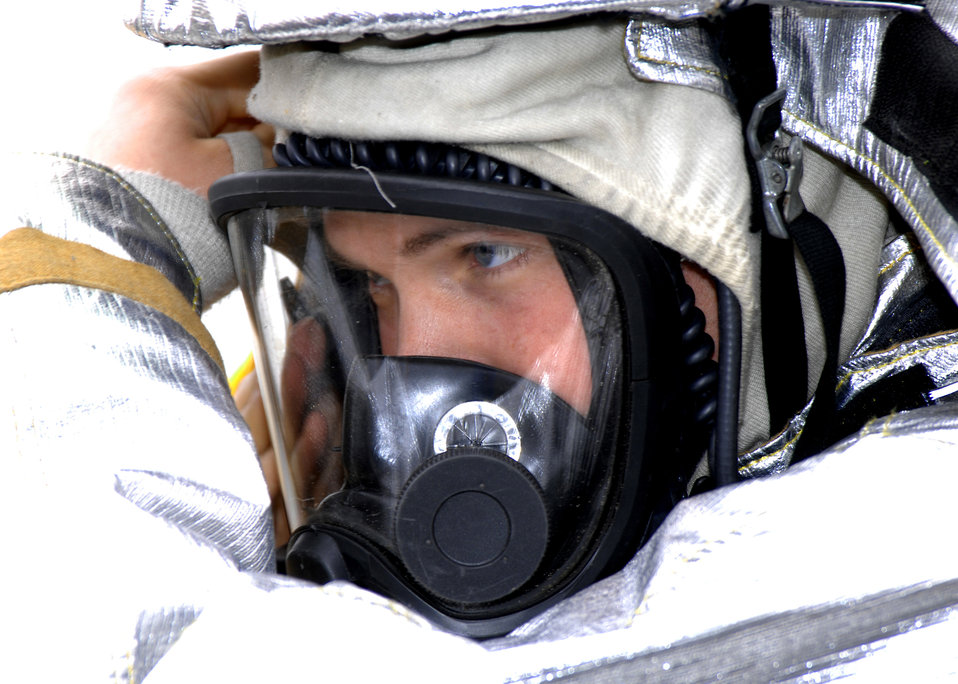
Getting ready

Firefighter Staff Sgt. Jeremy Luedtke prepares to take part in an emergency response exercise on Travis Air Force Base, Calif., Jan. 25, 2010.